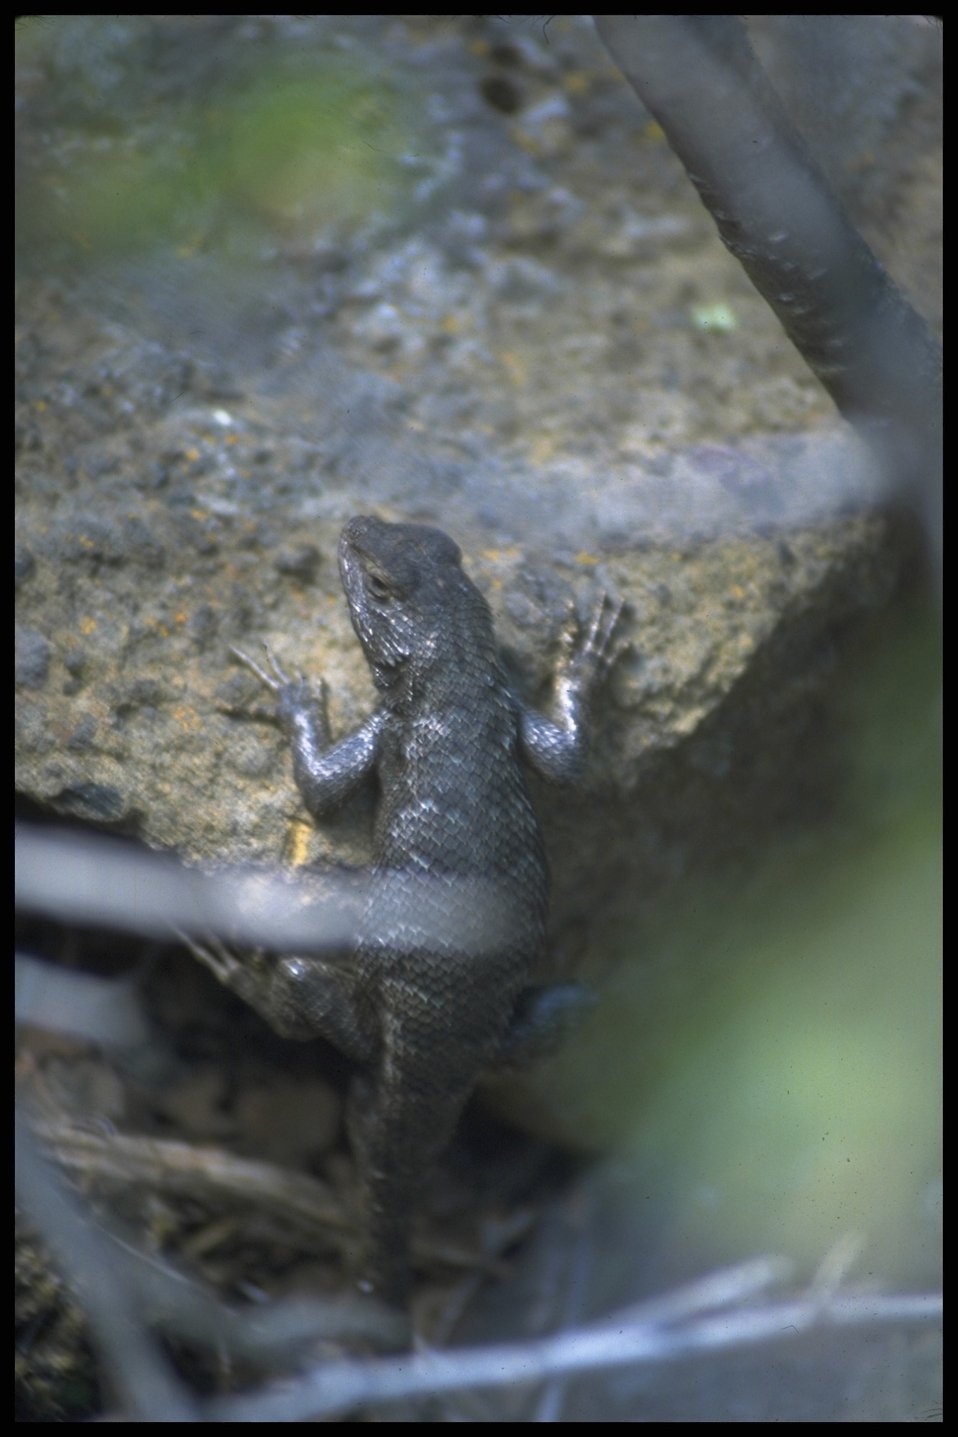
Close shot of lizard, Lakeview District.